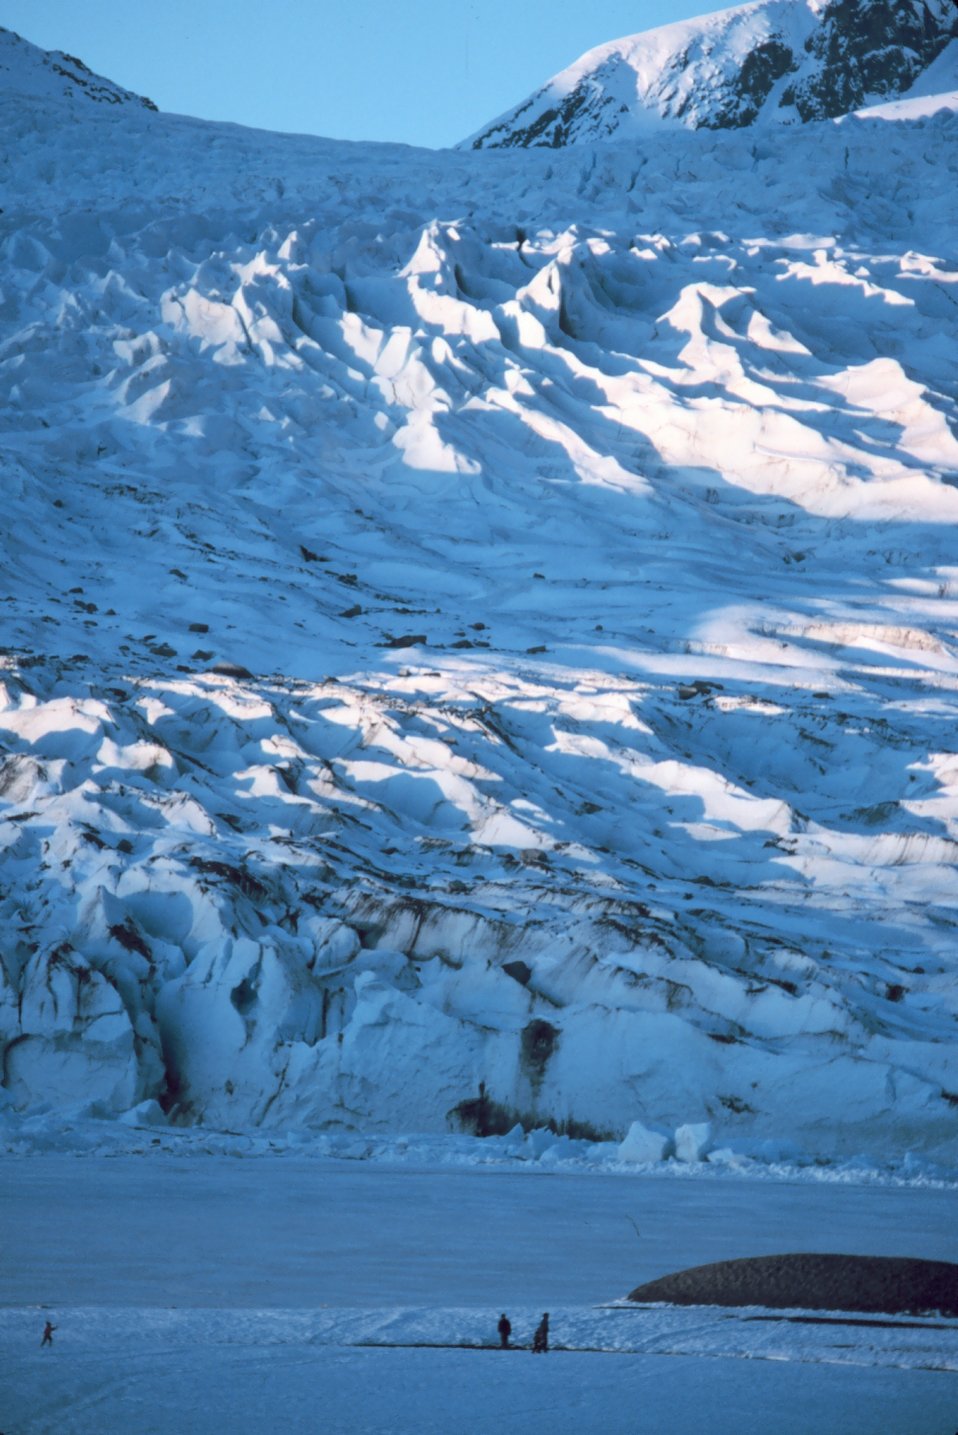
Mendenhall Glacier